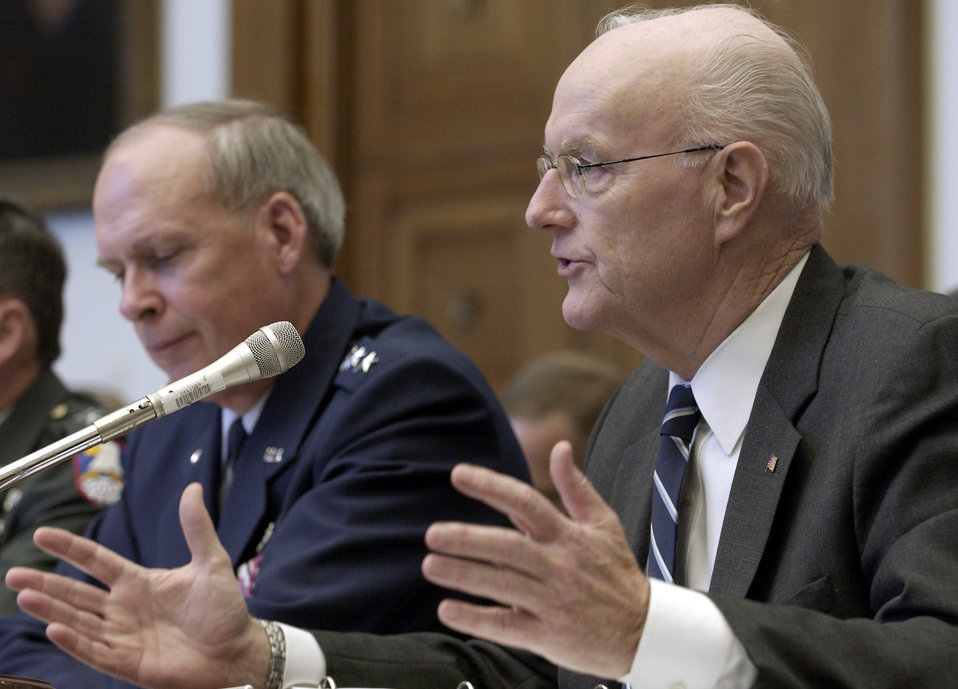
Space Cadre Testimony on Capitol Hill

WASHINGTON -- Undersecretary of the Air Force Peter B. Teets (right) and Gen. Lance Lord, commander of Air Force Space Command, testified before the House Armed Services Committee's strategic forces subcommittee July 22. The hearing focused on future space strategies.